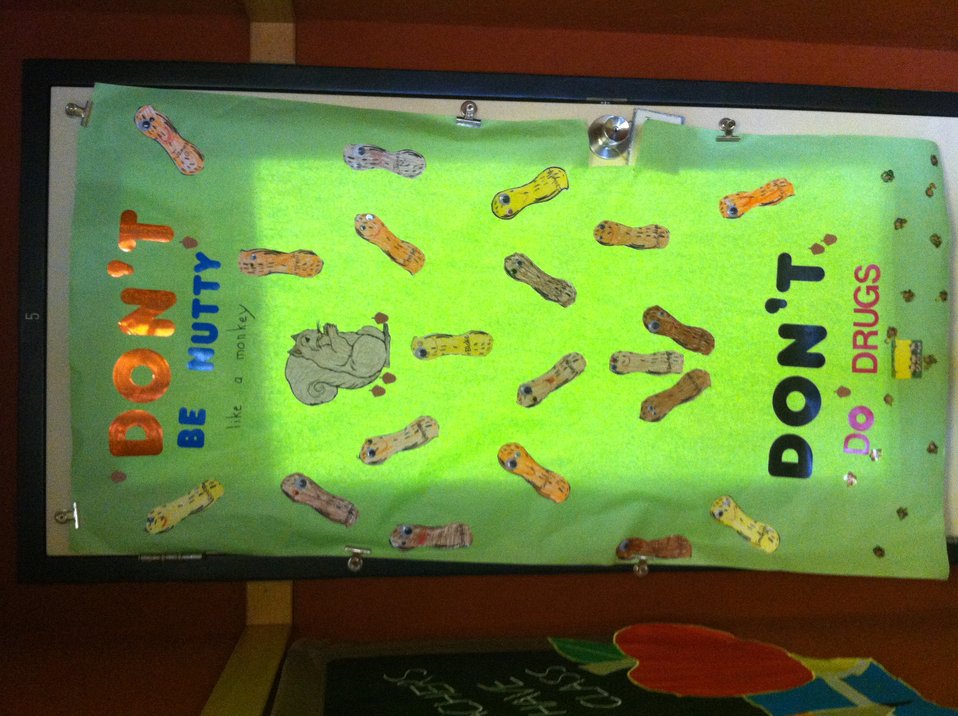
Poster Contest NDFW 2013

Alverton, Penn., Southmoreland Primary Center held a 'Jungle-themed' poster contest during its NDFW 2013 events.